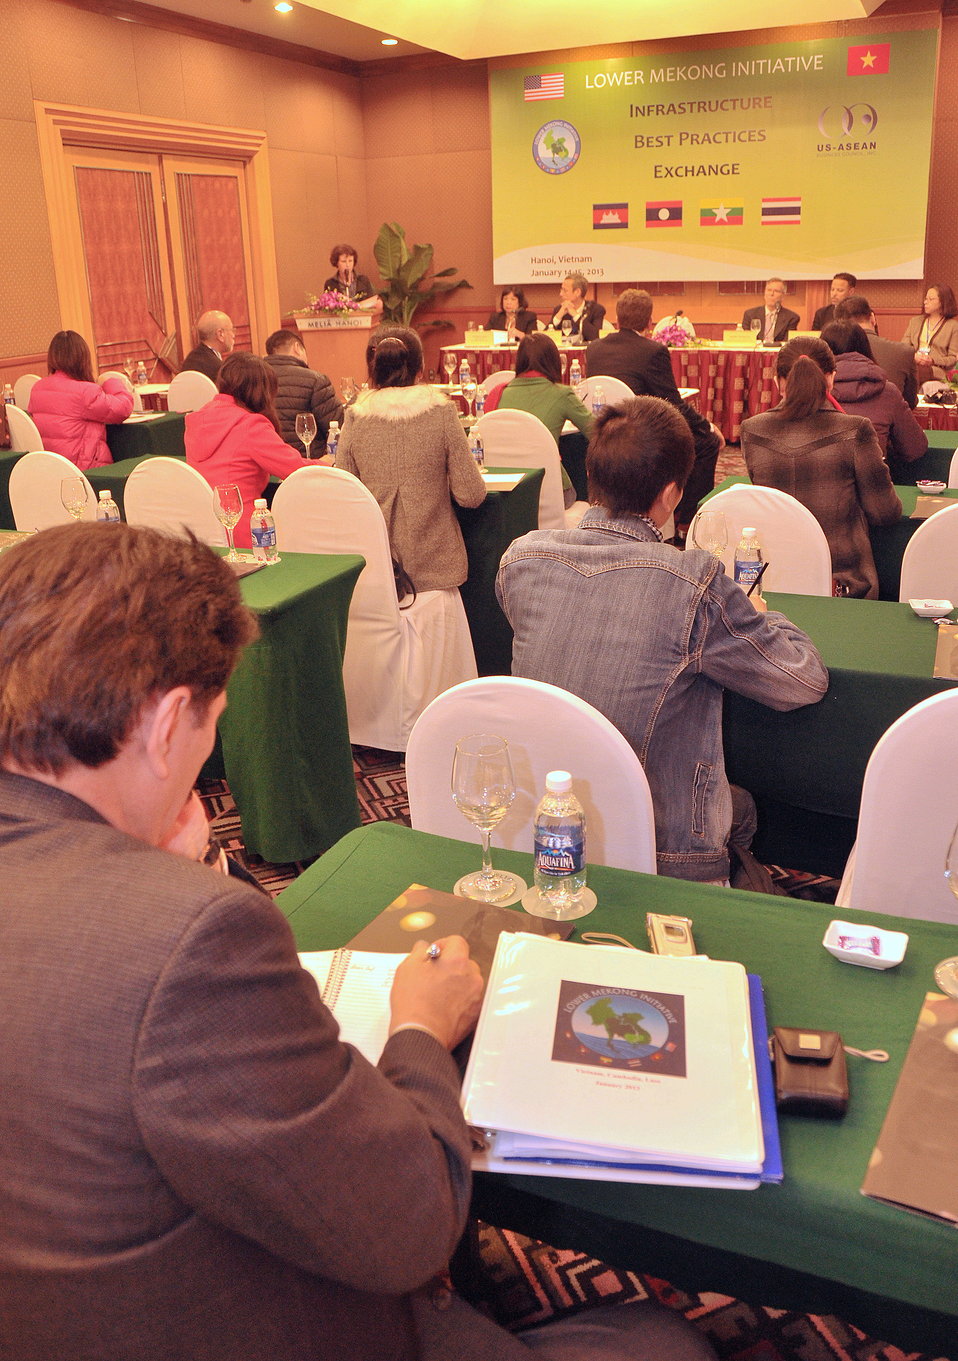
Press Conference at the LMI Infrastructure Best Practices Exchange

January 14, 2013